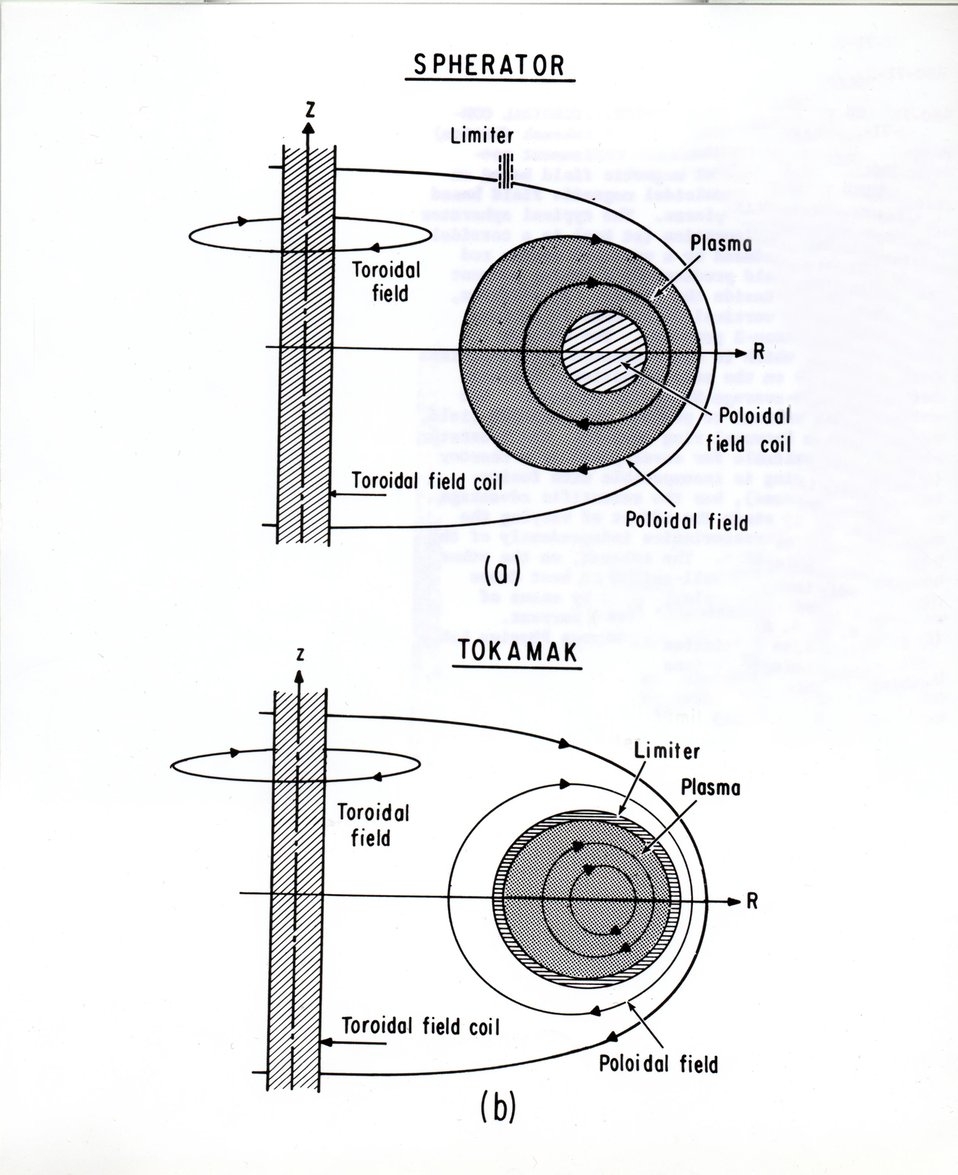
This illustrates the use of nuclear explosives to break ore bodies and subsequent recovery of minerals by leaching in-place. The mineral is chemically removed from the ore by acid seeping down through the broken rock. The mineral-carrying acid is then pumped to a processing plant on the ground surface where the mineral is removed from the acid. c. 1967